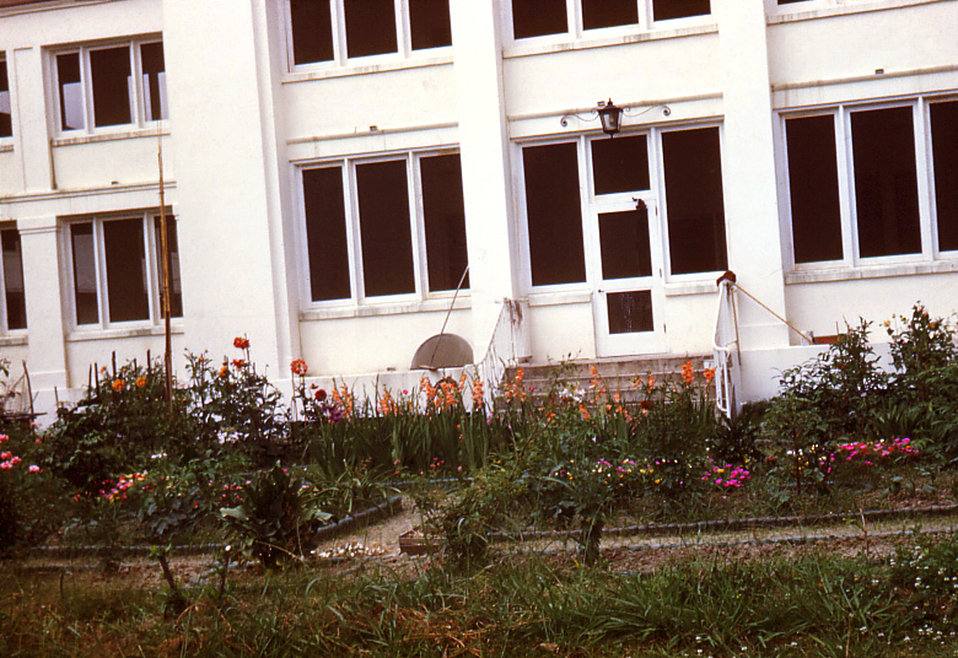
Grown by a Carville, Louisiana Leprosarium patient, this quaint garden was constructed from used Coca-Cola bottles that had been discarded by the hospital's canteen. Other gardens on the premises were based on other types of creative designs. There were many wonderful flower gardens, hosting plants of all kinds. Some of the patients had magical green thumbs, represented by these creative garden configurations. Being that the patients were for the most part quarantined, and therefore, sequestered from the surrounding society, participation in outdoor activities such as gardening, were appreciated by many patients.